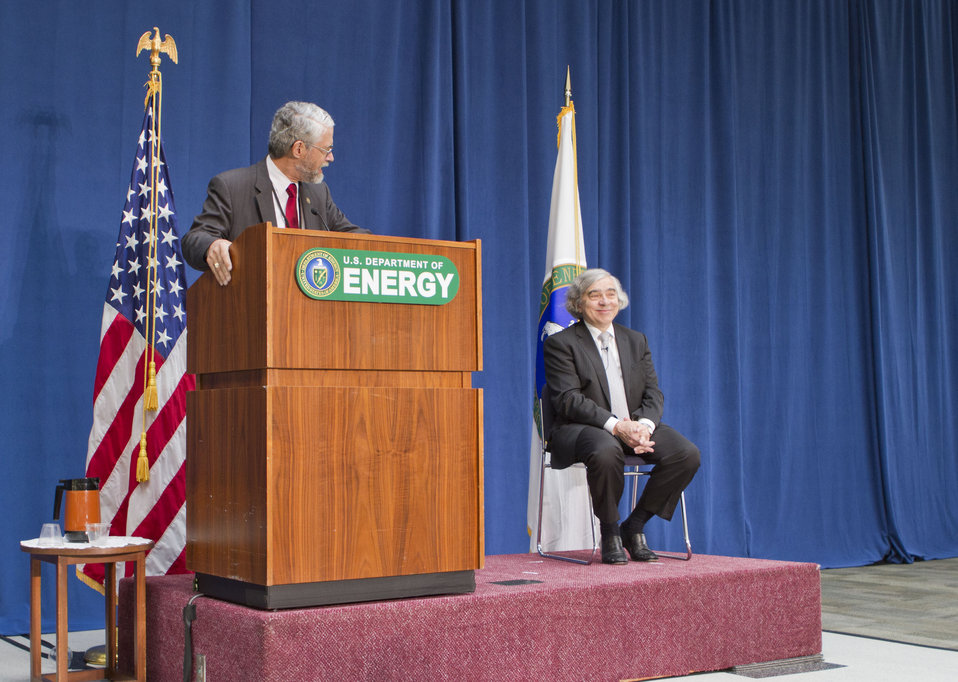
John P. Holdren and Dr. Ernest Moniz

Director of the White House Office of Science and Technology Policy John P. Holdren also delivered remarks leading up to Secretary Moniz's swearing-in ceremony.